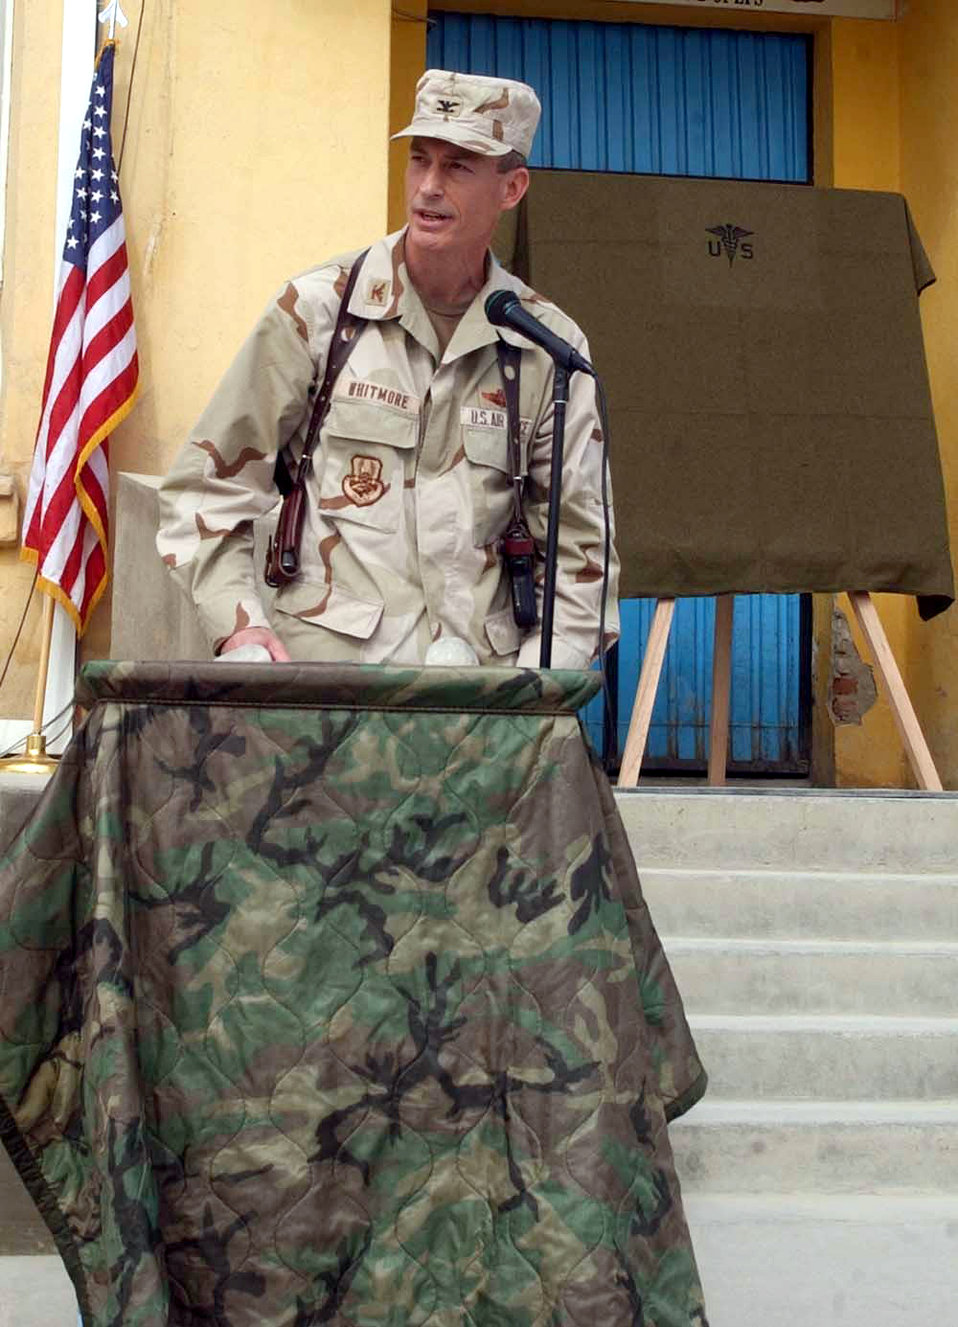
Paying tribute

BAGRAM AIR BASE, Afghanistan -- Col. James A. Whitmore pays tribute to Senior Airman Jason D. Cunningham at a ceremony renaming the Air Force compound here to Camp Cunningham. Airman Cunningham was a pararescueman killed in action during Operation Enduring Freedom. Colonel Whitmore is the 455th Air Expeditionary Wing commander.